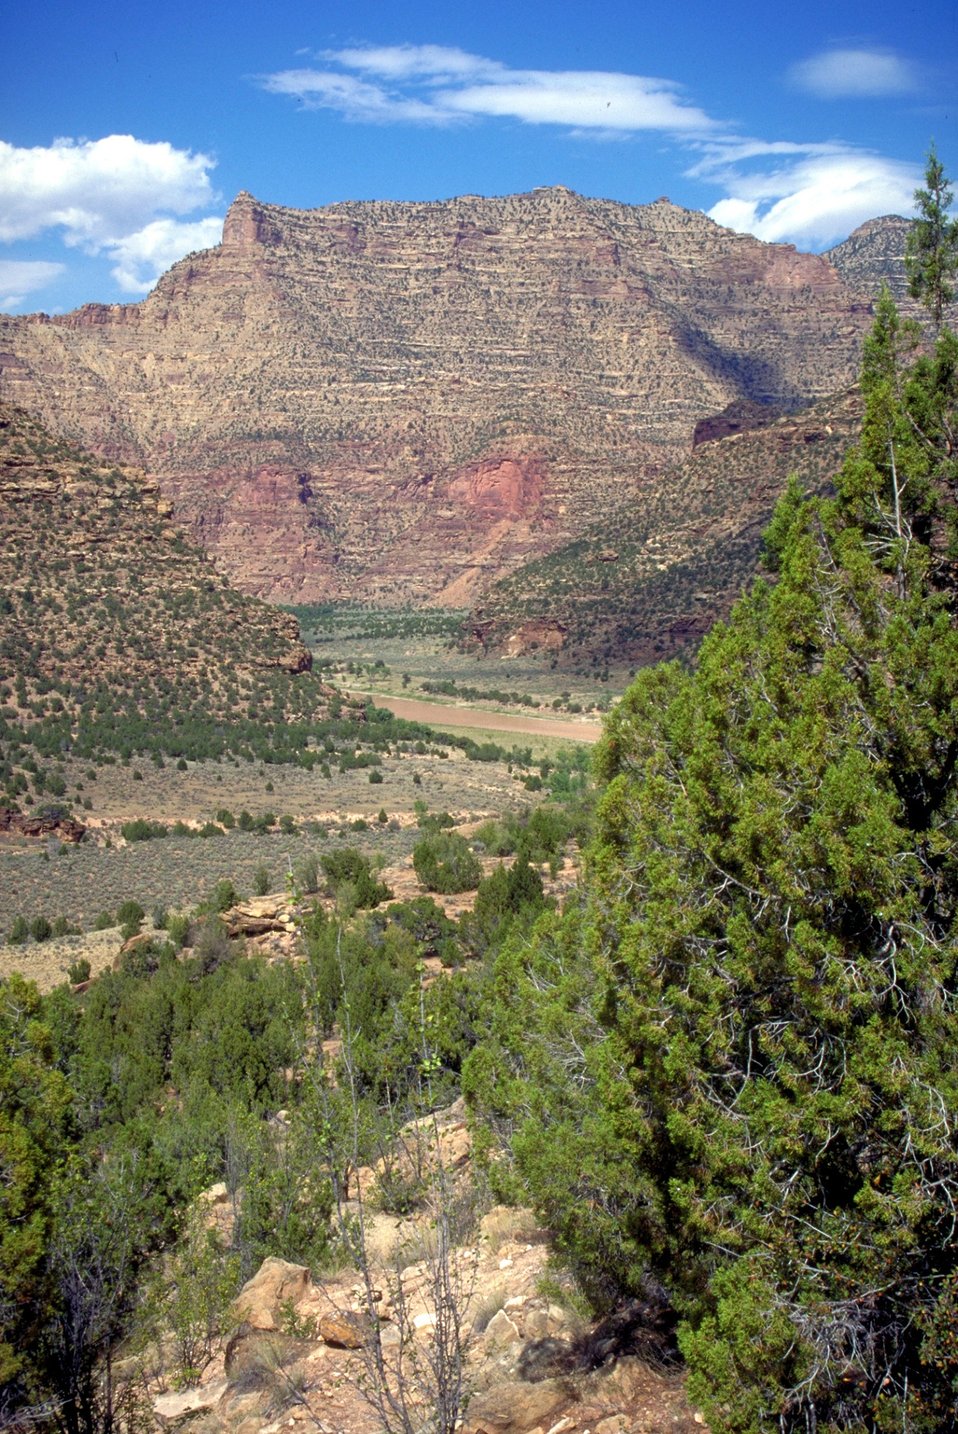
Desolation/Gray Canyons near Price, Utah.